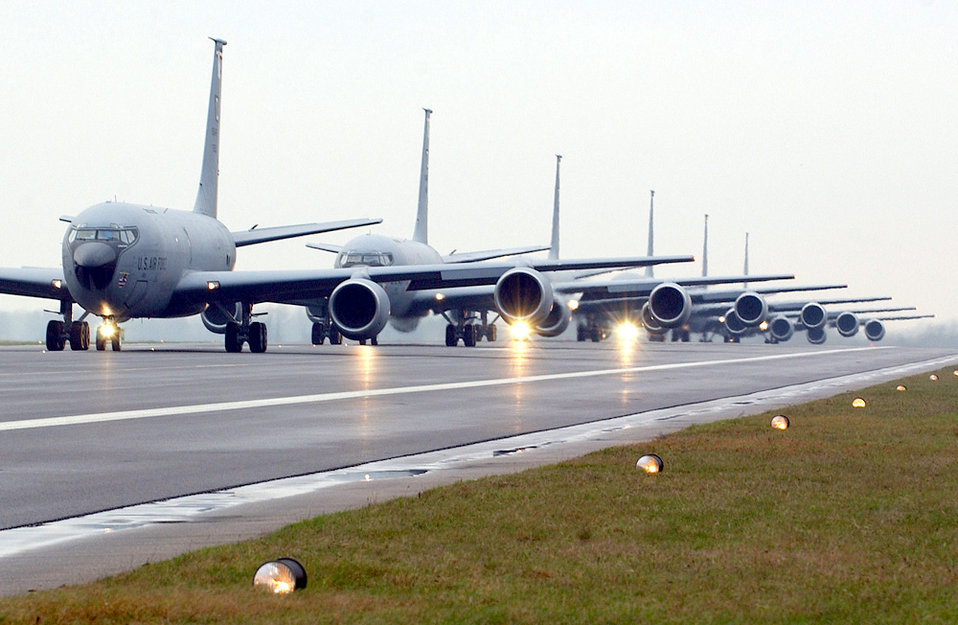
Follow the leader

ROYAL AIR FORCE MILDENHALL, England -- A six-ship KC-135 Stratotanker formation here demonstrates the 100th Air Refueling Wing's quick-response capability Jan. 23 as part of a training exercise. The 100th ARW maintains the only U.S. Air Force air-refueling assets based in Europe. Wing airmen are responsible for covering more than 20 million square miles and 93 countries in the European theater.